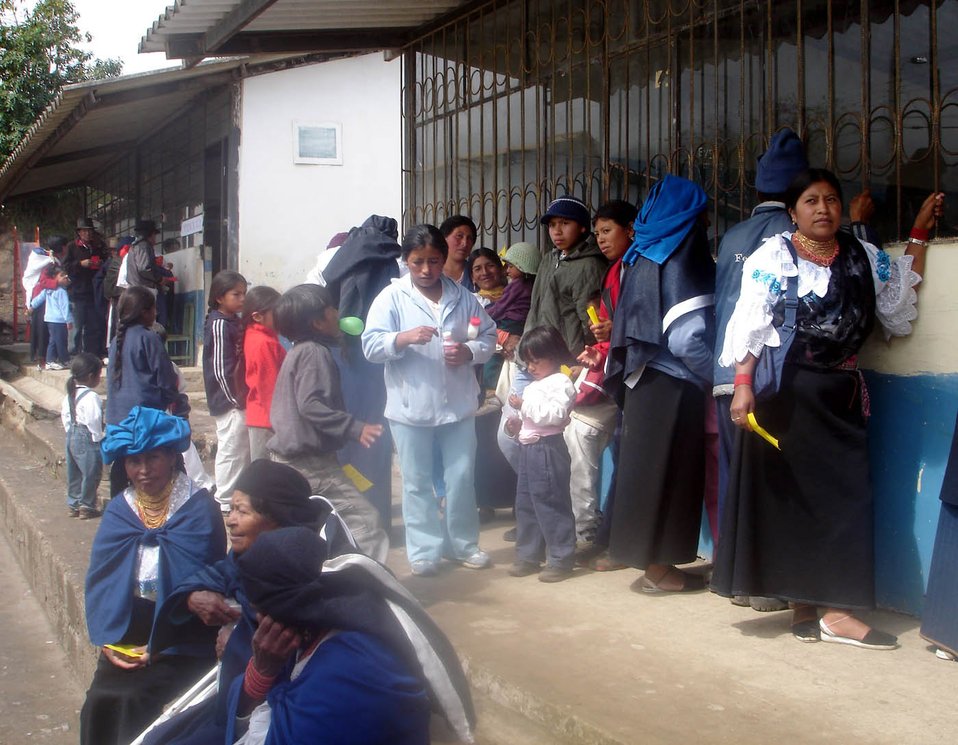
Air Force medics in Ecuador

OTAVALO, Ecuador (AFPN) -- A group of Ecuadorian Indians wait in line to visit the dental clinic Feb. 7. Air Force teams from the U.S. and Ecuador treated more than 7,000 patients during the 10-day medical readiness exercise that ended Feb. 9.